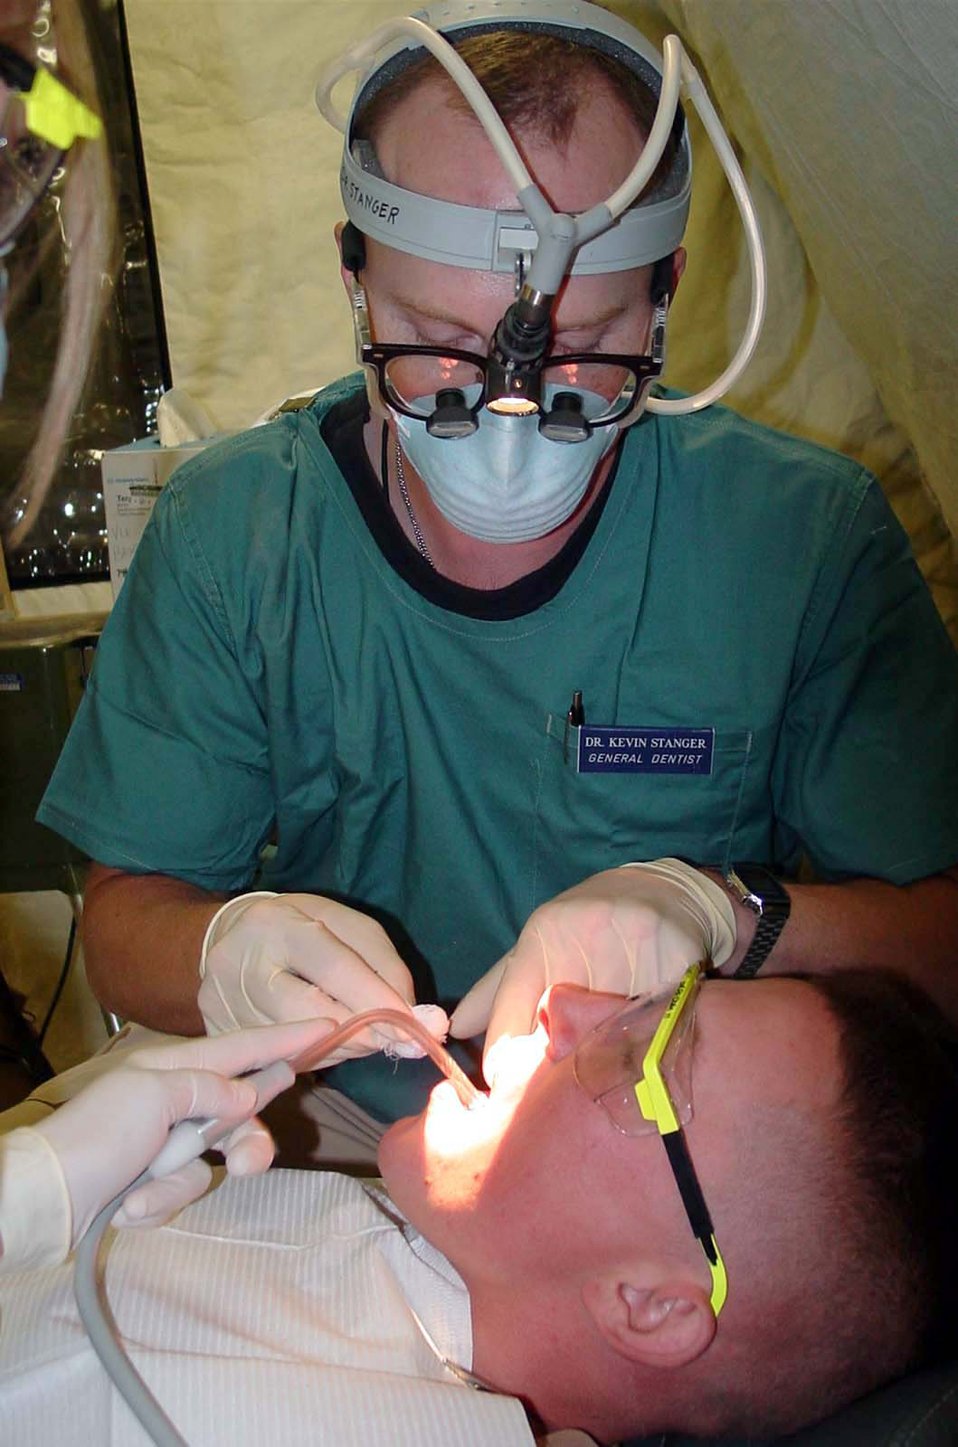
Deployed dentist

OPERATION IRAQI FREEDOM -- Maj. (Dr.) Kevin Stanger takes care of a filling for Army Spc. Jason Ramer of the 1st Batallion, 293th Infantry Regiment. As the only military dentist for hundreds of square miles, Stanger provides care for coalition forces from the United States, United Kingdom, Poland, Italy and South Korea. He is assigned to the 407th Expeditionary Medical Squadron at Tallil Air Base in southern Iraq.